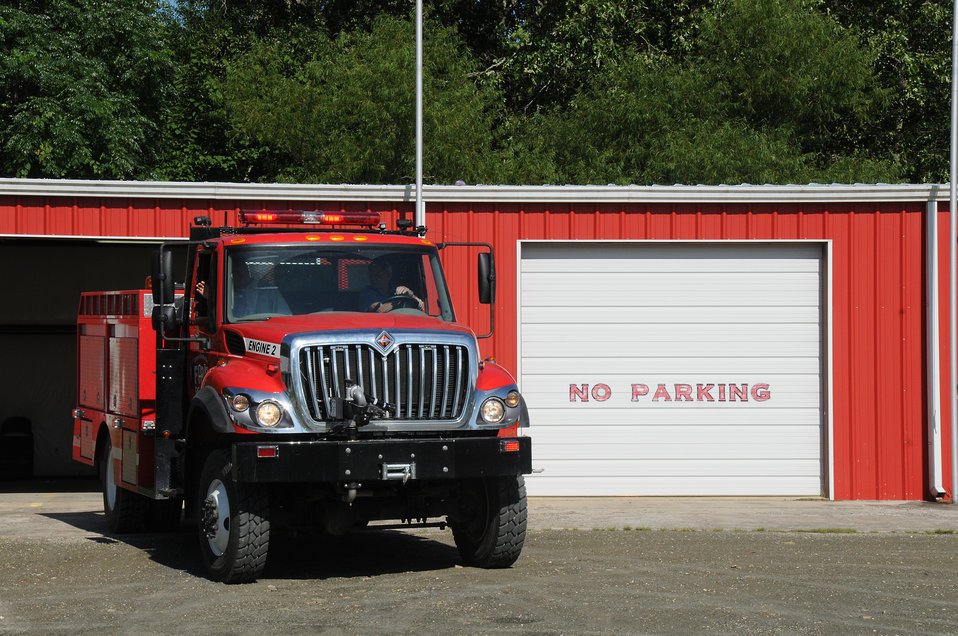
The U.S. Department of Agriculture (USDA) Rural Development (RD) Housing and Community Facilities Programs provided funding to the Octavia / Smithville, Oklahoma fire department through the American Recovery and Reinvestment Act (ARRA) on August 11. 2009.